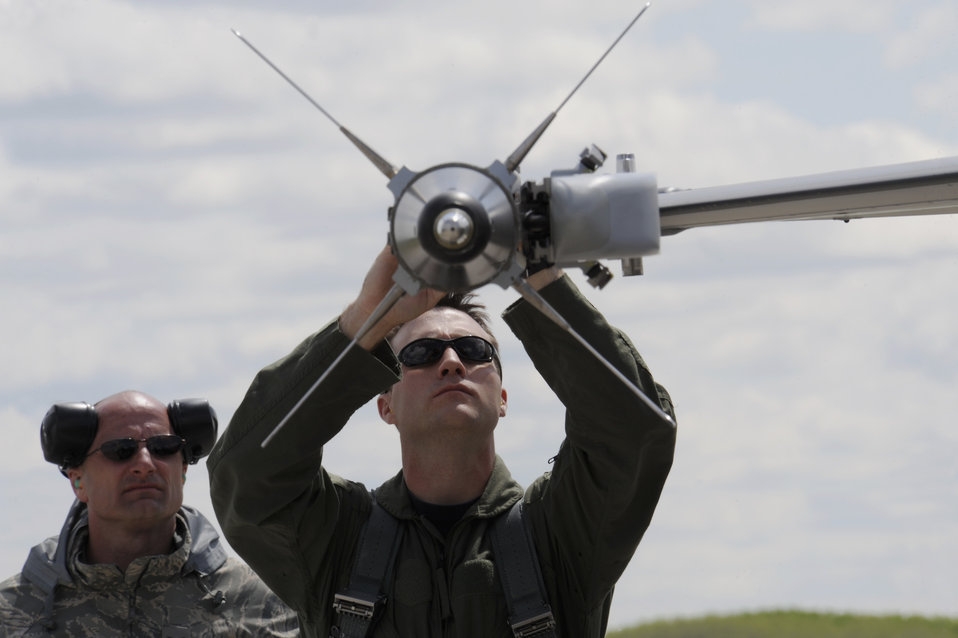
Maple Flag 42

Capt. Jeremy Doohen, an F-16 Fighting Falcon pilot, assigned to the 175th Fighter Squadron, Sioux Falls, S.D. Air National Guard, inserts a air combat maneuvering instrumentation card inside his right wing in preparation for a training mission during exercise Maple Flag 42 at 4 Wing Cold Lake, Canada, June 4. The ACMI card, enables Maple Flag observers and mission planners to track pilots real-time during their simulated air wars.